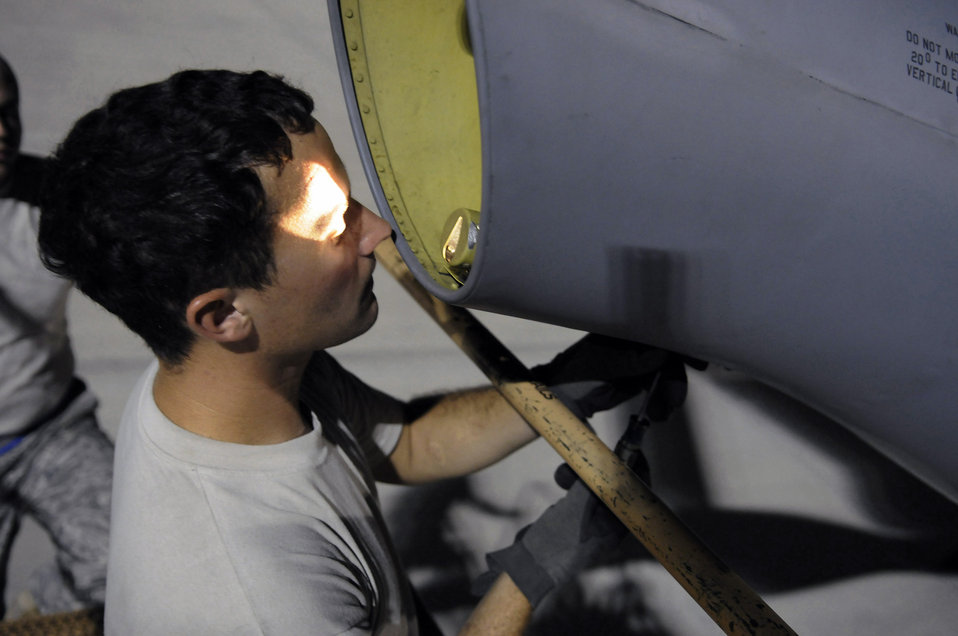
Night light

Staff Sgt. Ryan Letourneau adjusts a clamp after changing out the boom light on a KC-135 Stratotanker Oct. 27 at an air base in Southwest Asia. The KC-135 provides aerial refueling support to Air Force Navy, Marine Corps and allied nation aircraft operating in the Central Command area of responsibility. Sergeant Letourneau is assigned to the 379th Expeditionary Aircraft Maintenance Squadron. He is a native of Prosser, Wash., and is deployed from Fairchild Air Force Base, Wash.